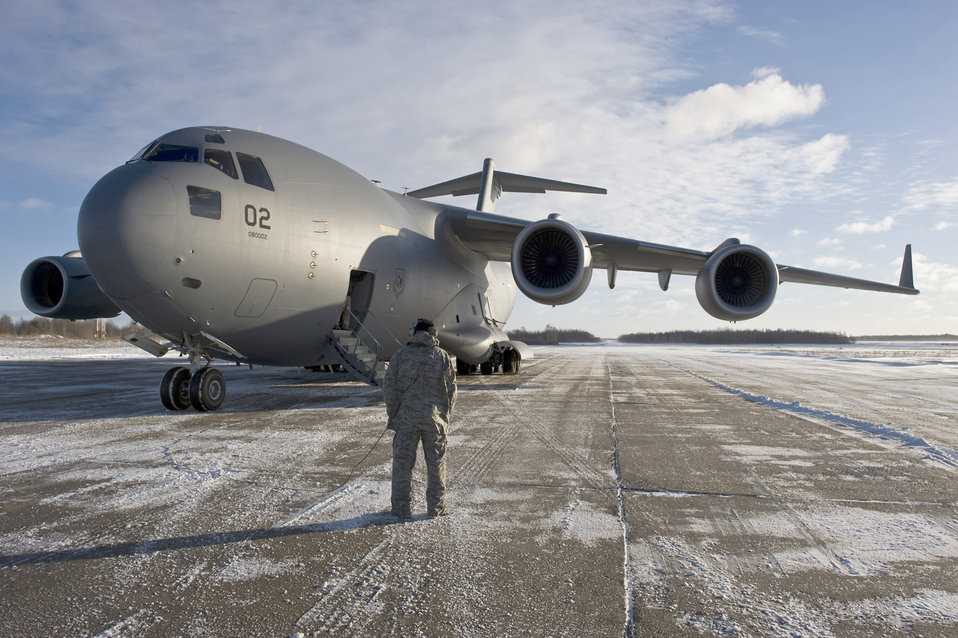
Three-day mission

U.S. Air Force Tech. Sergeant Joseph Johns, flying crew chief from Papa, Hungary communicates with the C-17 Globemaster III pilots while on an airfield in Lithuania, Dec. 10, 2010. The three-day mission will span over 7000 miles covering countries of Hungary, Poland, Afghanistan and Lithuania with over 75,000 tons of cargo.